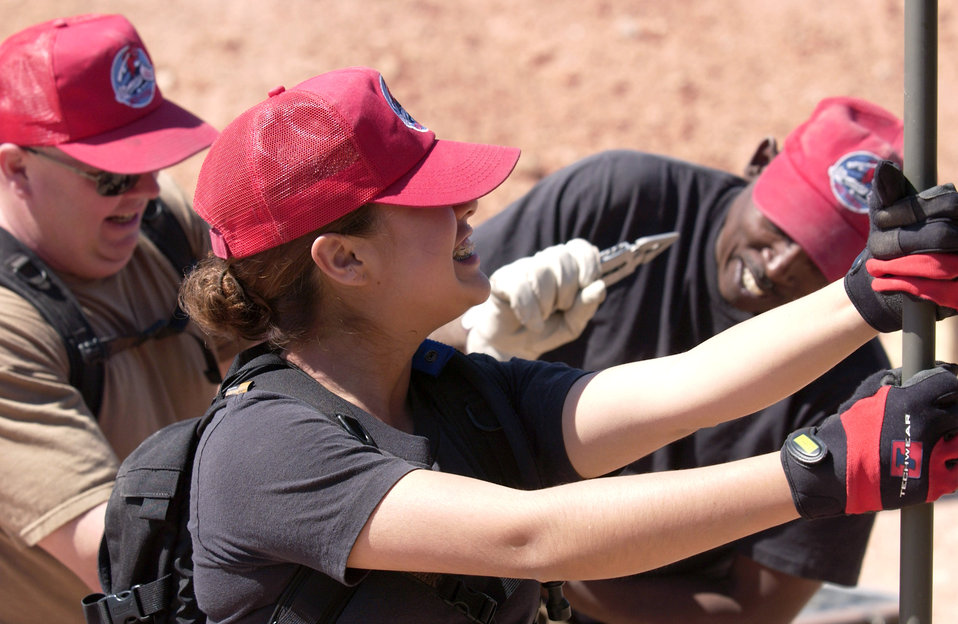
Red Horse in action

(Left to right) Staff Sgt. Fred Holden and Tech. Sgts. Heather Gaines and Jimmy Reed set up equipment during a bare-base build-up exercise at Nellis Air Force Base, Nev., April 8 to 9, 2006. The operation included beddown and construction operations for 120 Airmen. The camp had a mobile field kitchen with generators, reverse-osmosis water purification unit and field latrine equipment. The Airmen are with the 555th Red Horse Civil Engineer Squadron.